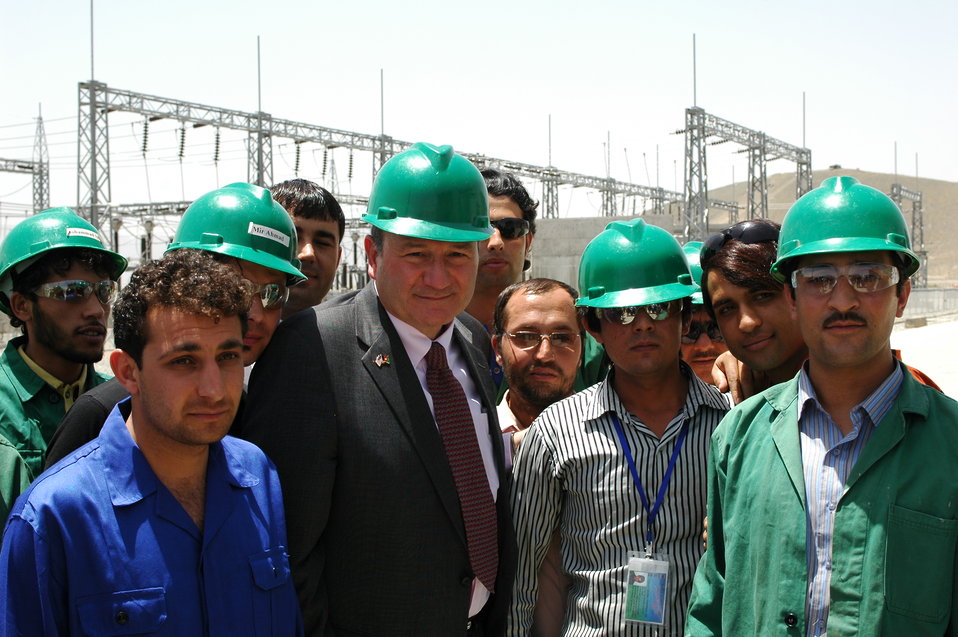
Tarakhil Power Plant Handed over to Afghan Government